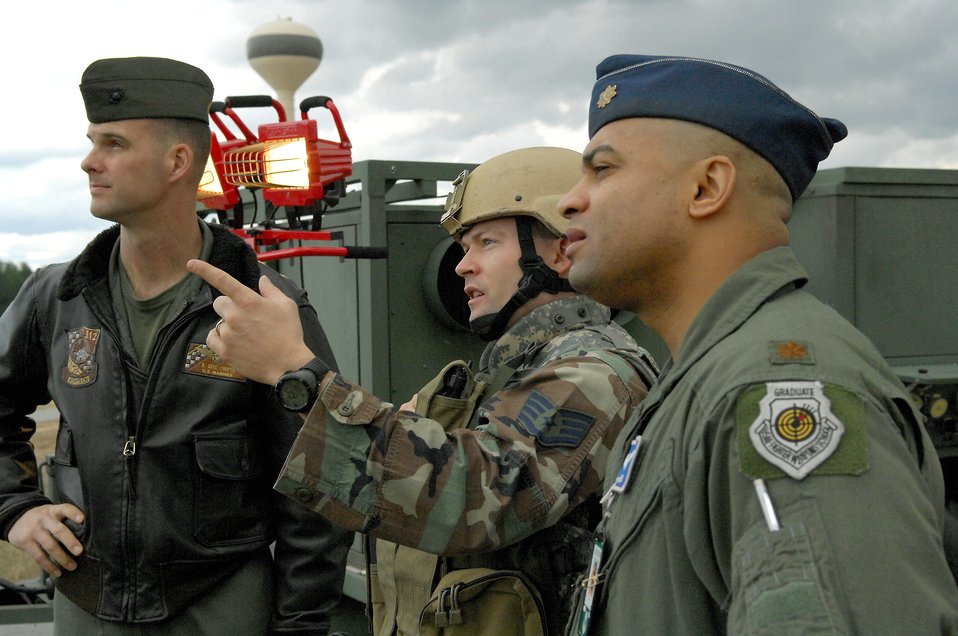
682nd ASOS performs final tests on 'Gateway'

Staff Sgt. Justin Cremer (center) briefs Marine Corps Lt. Col. Robert Cooper (left) and Maj. Darren Gray on the Air Support Operations Center Gateway Feb. 13 at Shaw Air Force Base, S.C. The Gateway, a vehicle mounted communications system, is going through its final tests during an operational readiness exercise before it will be used in theater operations. Sergeant Cremer is the 682nd Air Support Operations Squadron operations training manager, Colonel Cooper is the 609th Combat Operations Squadron U.S. Central Forces weapons officer and Major Gray is the 609th Combat Plans Squadron special assistant to U.S. Central Forces commander.